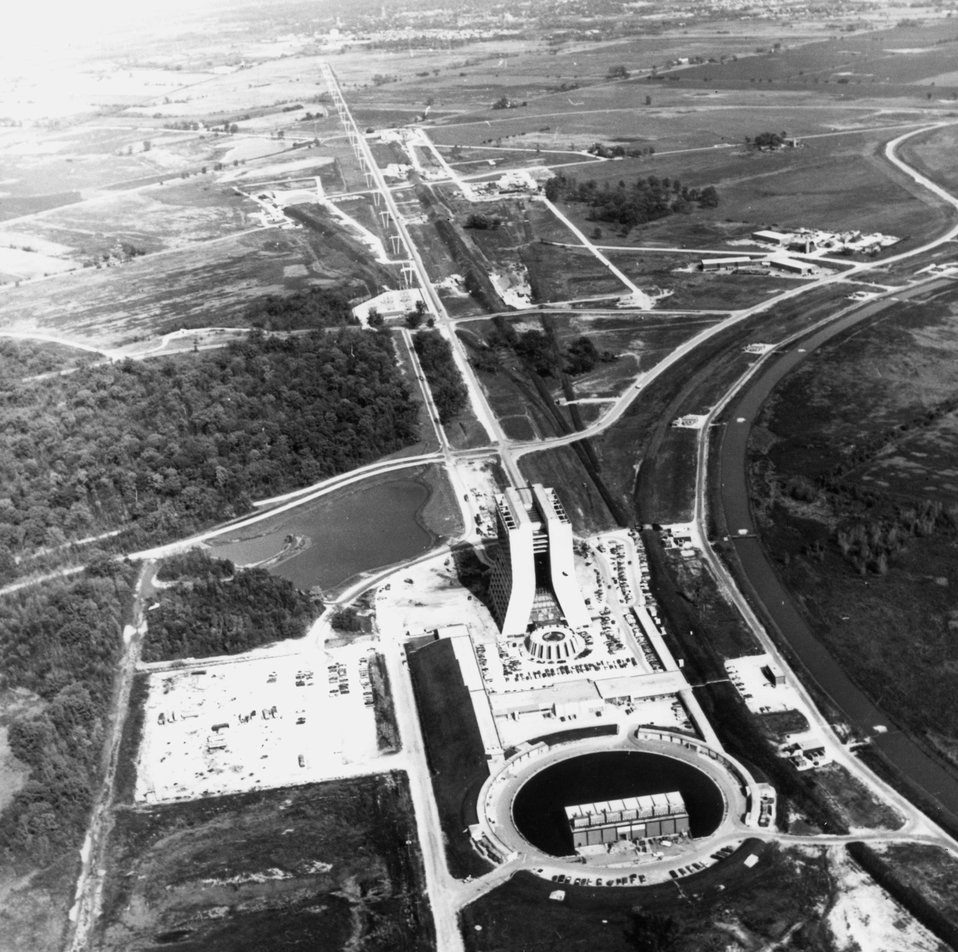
Aerial view of the AEC NAL showing the three external experimental areas in the background, 16 story Central Lab building and circular auditorium in the middle booster cooling pond and utility building in foreground.
c.1974